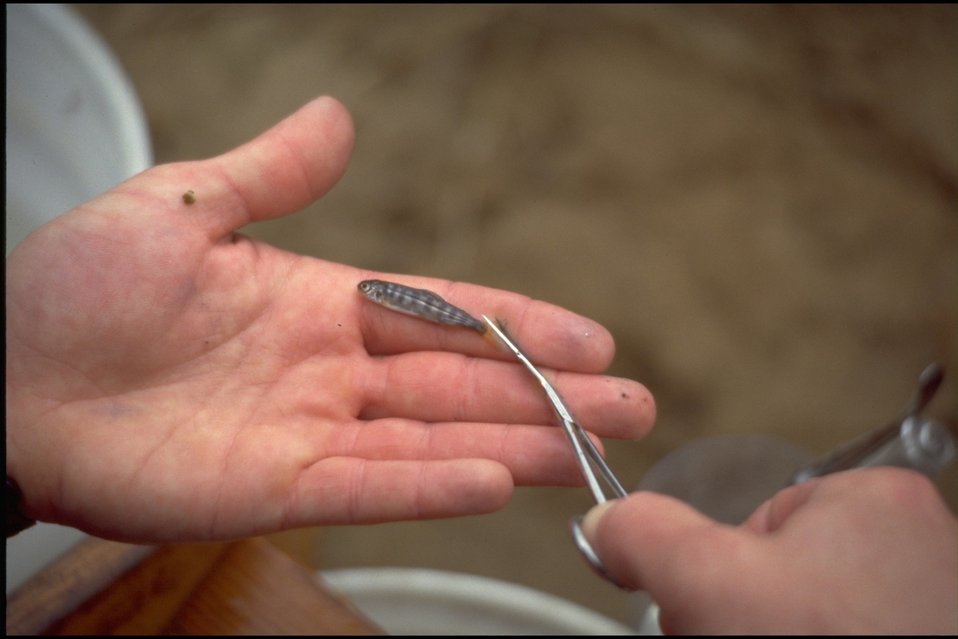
Wolf Creek Fish Count.